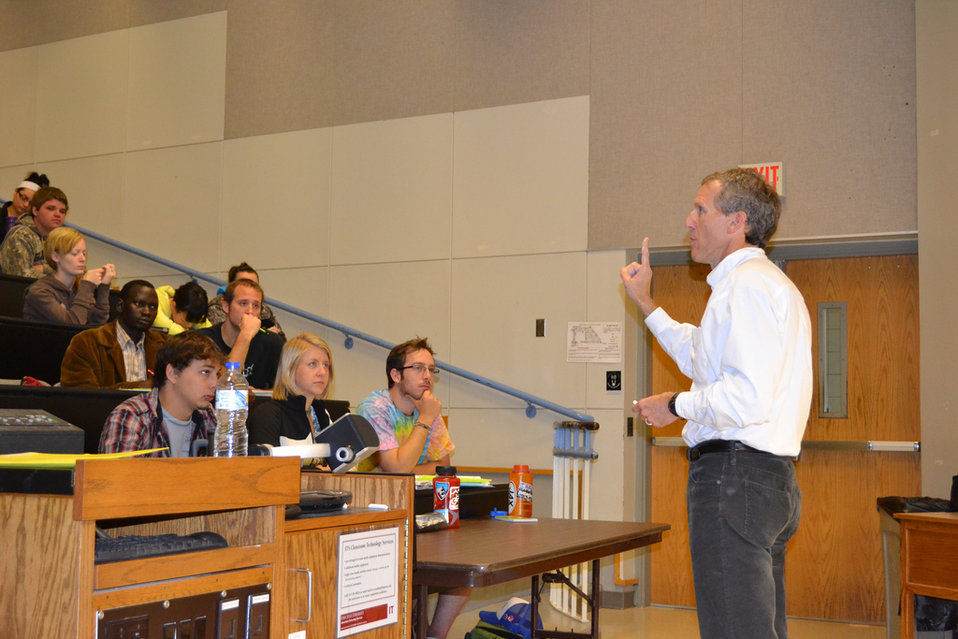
October 21, 2011 Region 7 Administrator Visits Iowa State University

EPA Region 7 Administrator Karl Brooks was a guest lecturer at Iowa State University as part of his outreach to land-grant institutions in Iowa, Kansas, Missouri, and Nebraska.

He was a guest lecturer for a soils and environmental quality class and discussed measures to reduce soil erosion, nutrient reduction strategies, EPA grants, impaired waters and outreach to the agricultural community, with students and faculty.